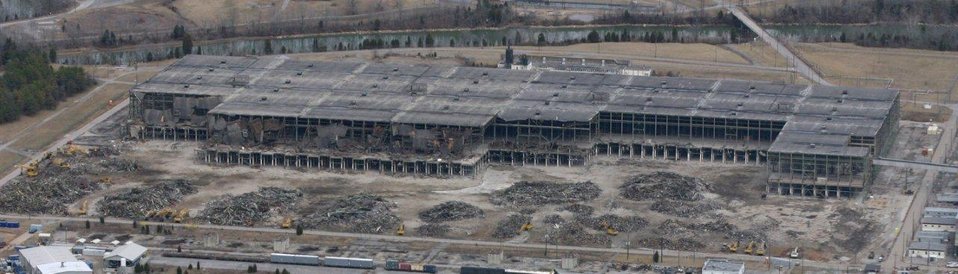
Recovery Act-funded K-33 demolition

Building K-33 is shown during demolition activities.